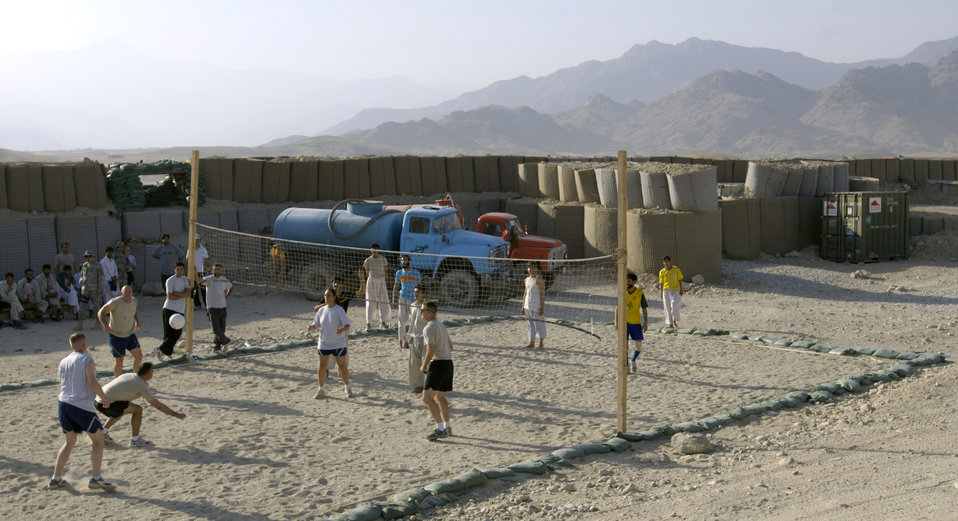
Volleyball unites Afghans, Americans

Airmen and Soldiers from the Provincial Reconstruction Team host a volleyball game Aug. 26 for Afghan high school students invited from the province's five districts Aug. 26 at Forward Operating Base Mehtar Lam, located in Afghanistan's Laghman Province. The weekly volleyball games are designed to give the students a chance to meet and interact with military members in a friendly atmosphere.